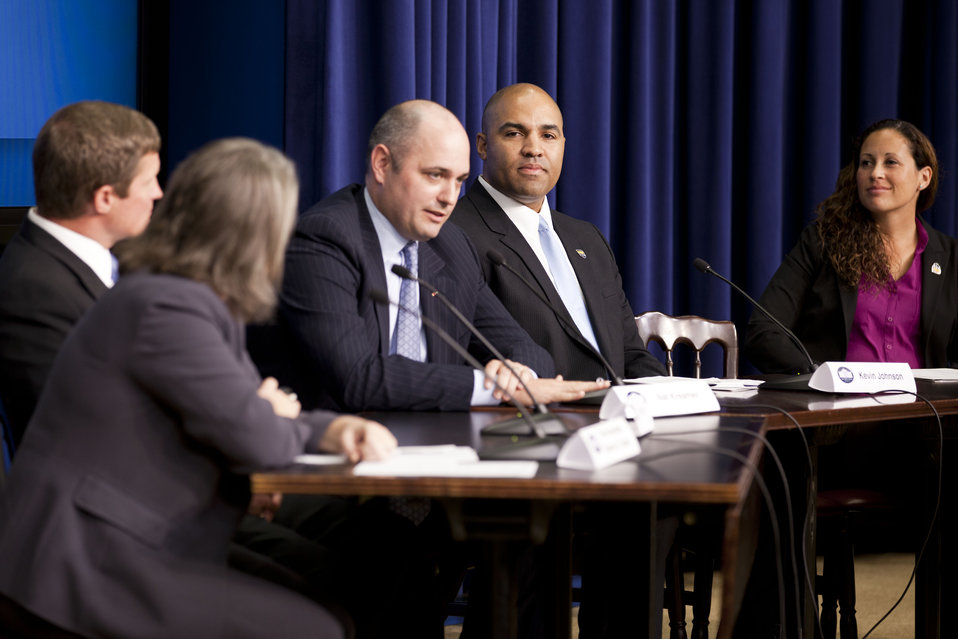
A panel hosted by Sharon Burke, Assistant Secretary of Defense for Operational Energy Plans and Programs, discusses the national security ramifications of climate change.